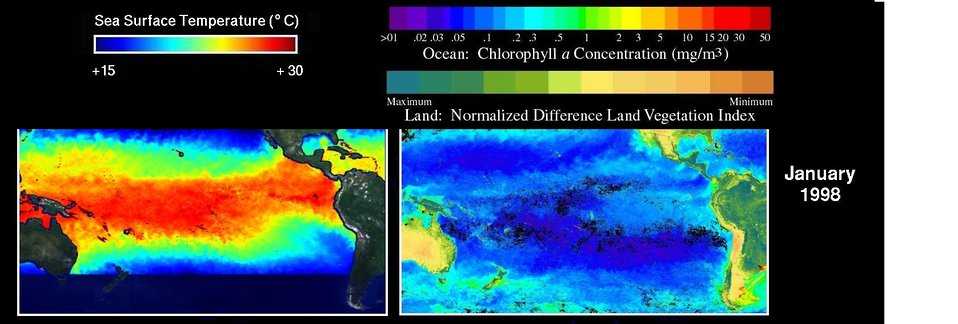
Image #2 of sequence. SST anomalies in January were close to the highest observ ed during the most recent El Nino. There is little or no evidence of the equato rial cold tongue or of enhanced chlorophyll along the equator.